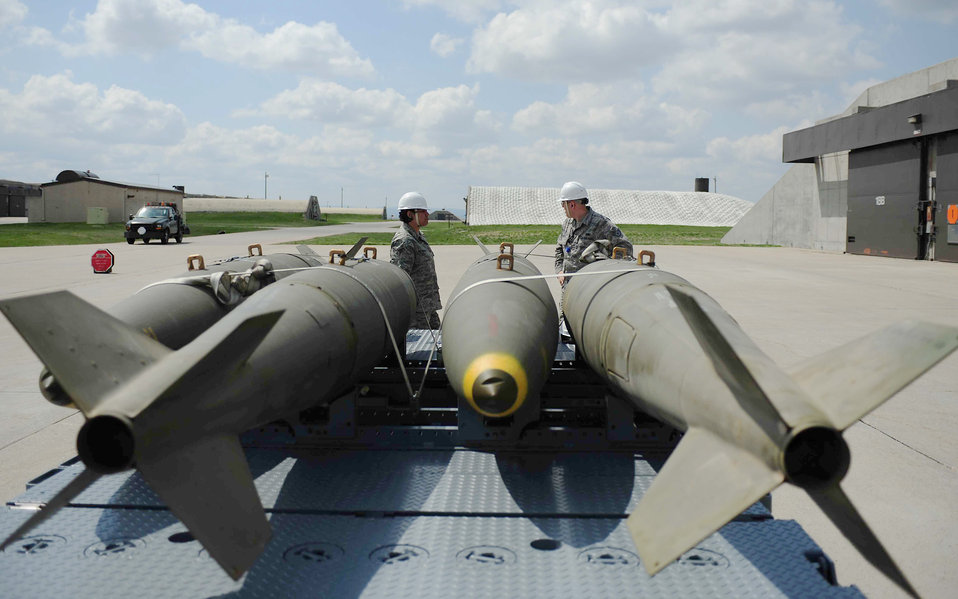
Warehousing the Mark 84 bomb

Senior Airman Jennifer Peterson (left) and Staff Sgt. Jeremiah Phelps prepare to move Mark 84 bombs inside a hardened structure April 21, 2010, at Ellsworth Air Force Base, S.D. Both Airmen are assigned to the 28th Munitions Squadron as conventional maintenance crew chiefs.